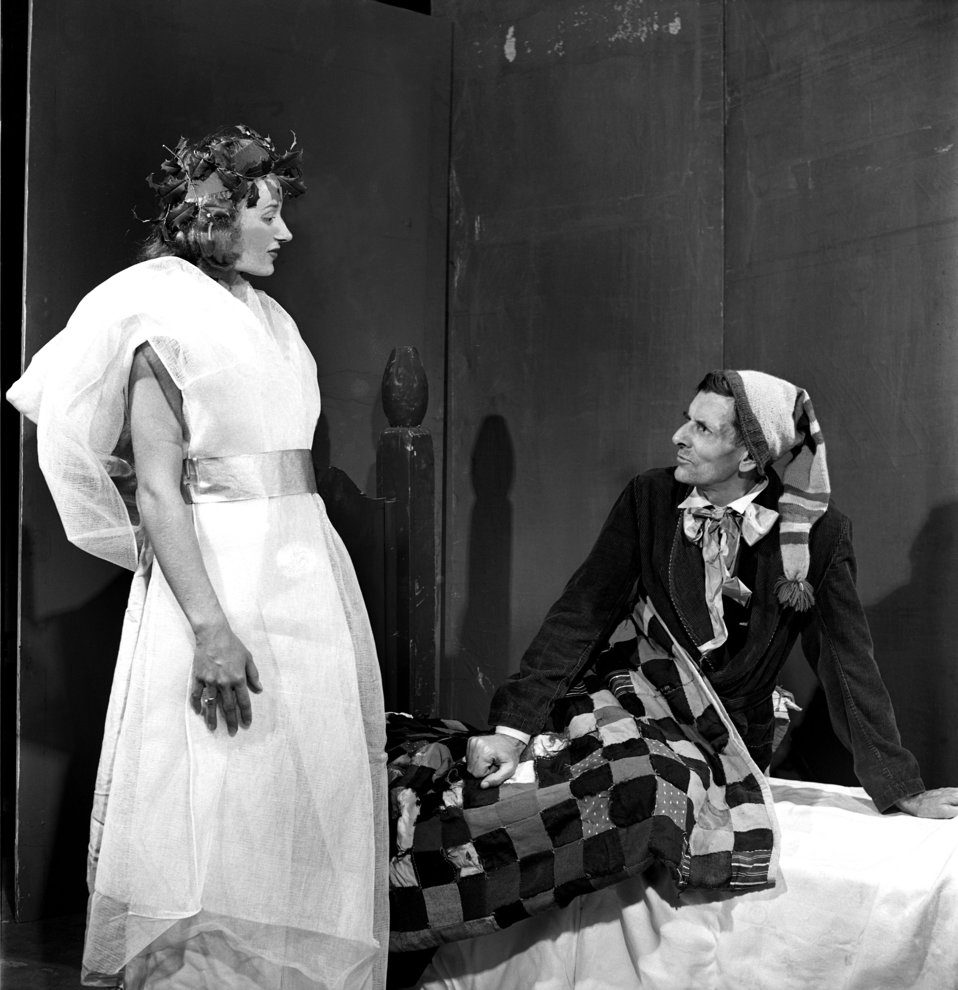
Community Playhouse 'Christmas Carol' Oak Ridge 1947

4067-f DOE photo Ed Westcott 12-5-1947 Oak Ridge Tennessee